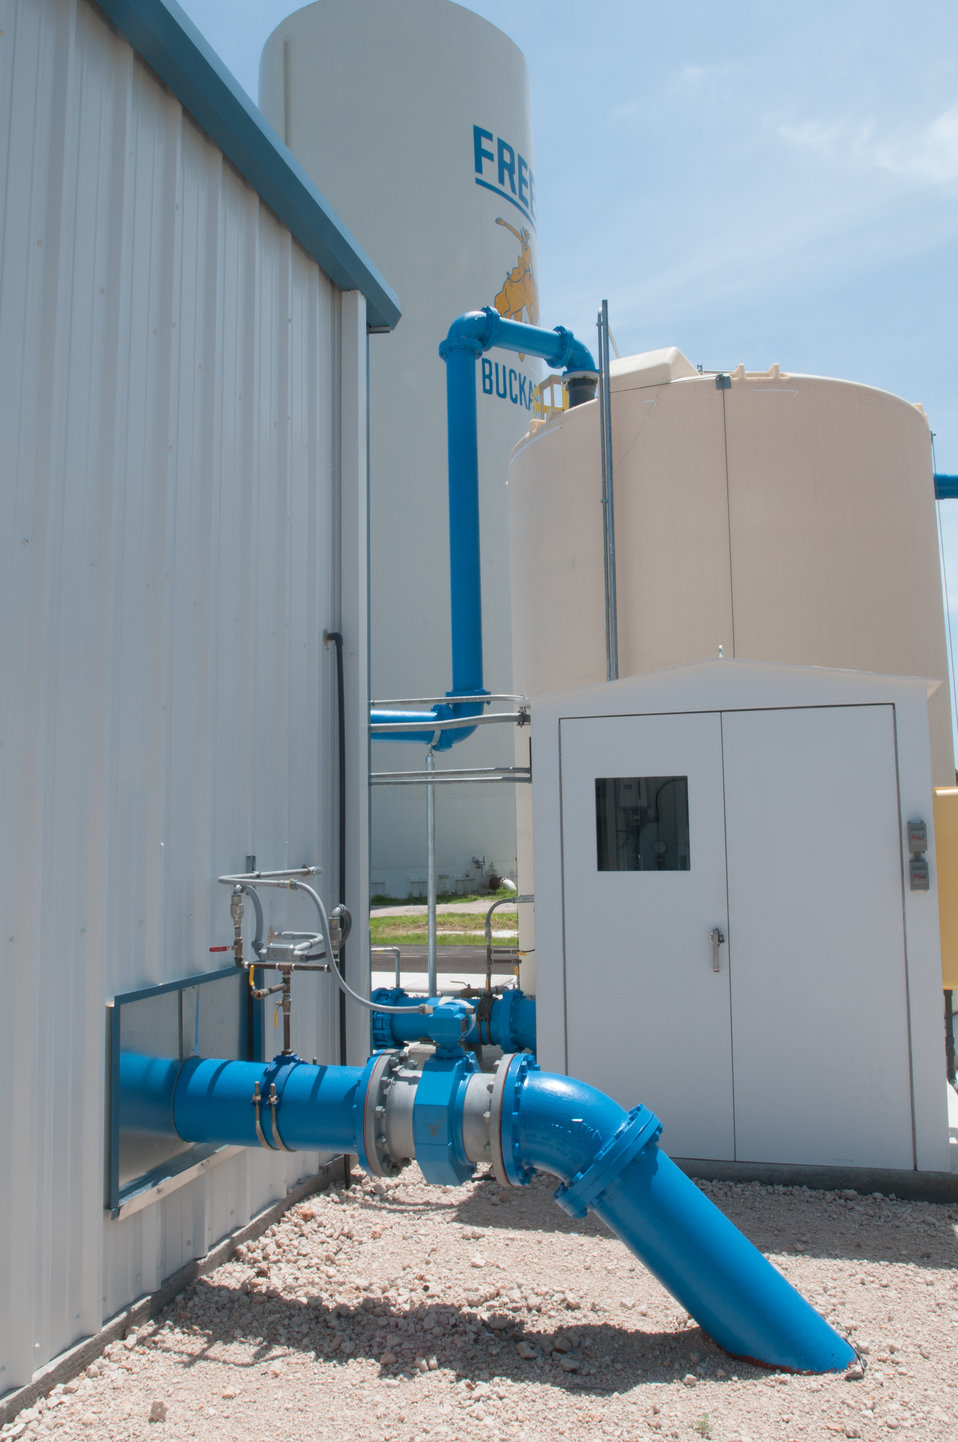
Blue inlet pipe brings water from remote wells and river sources into the Freer Water Control and Improvement District (WCID) Arsenic Removal System facility, in Freer, TX, on Tuesday, June 18, 2013.
Freer Water Control and Improvement District (FWCID) benefits from the financial assistance of the U.S. Department of Agriculture (USDA) Rural Development (RD) to complete a two-phase approach to meeting the city’s water supply and safety needs, on Tuesday, June 18, 2013. Although, the naturally occurring arsenic levels have remained constant for more than a century, the Environmental Protection Agency (EPA) safe level standards have established lower levels of arsenic to be safe for human consumption. To meet those levels FWCID approached USDA and was awarded a $986,000 loan for Phase I, to install two new water wells, each rated at 167 gallons per minute (creating a total of eight wells); 13,600 feet of well collection lines; and 15,000 linear feet of well control line to remotely control the well pumps and the 1,000,000 gallon holding tank at the well facility, which supplies water to the new Arsenic Removal System (Phase II). Previously, water was manually controlled by personnel who knew when and how long to manually opened and closed water valves or started well pumps to ensure holding tank levels were within operating levels during peek and slack times of the day. Phase II was a combination of a $1,832,000 loan and a $1,258,750 grant, which provided for the customized arsenic removal system, seen in these photos. The system includes a new 3,530 sp. ft. facility, on a .76-acre site, and houses the operations room, computer and power system, laboratory room, and pump systems. The entire operation can be monitored through a desktop computer interface system. The computer-controlled system ensures raw water is fed to the arsenic removal pump system, which works in sequence to maintain a constant pressure, when needed, to pump water through (blue) arsenic removal absorber vessels, and into ground storage tanks that feeds the residential and commercial needs of the city. Samples of water are periodically tested; and so far the arsenic levels have been below 1 part per billion (PPB), well under the 10 PPB limit.